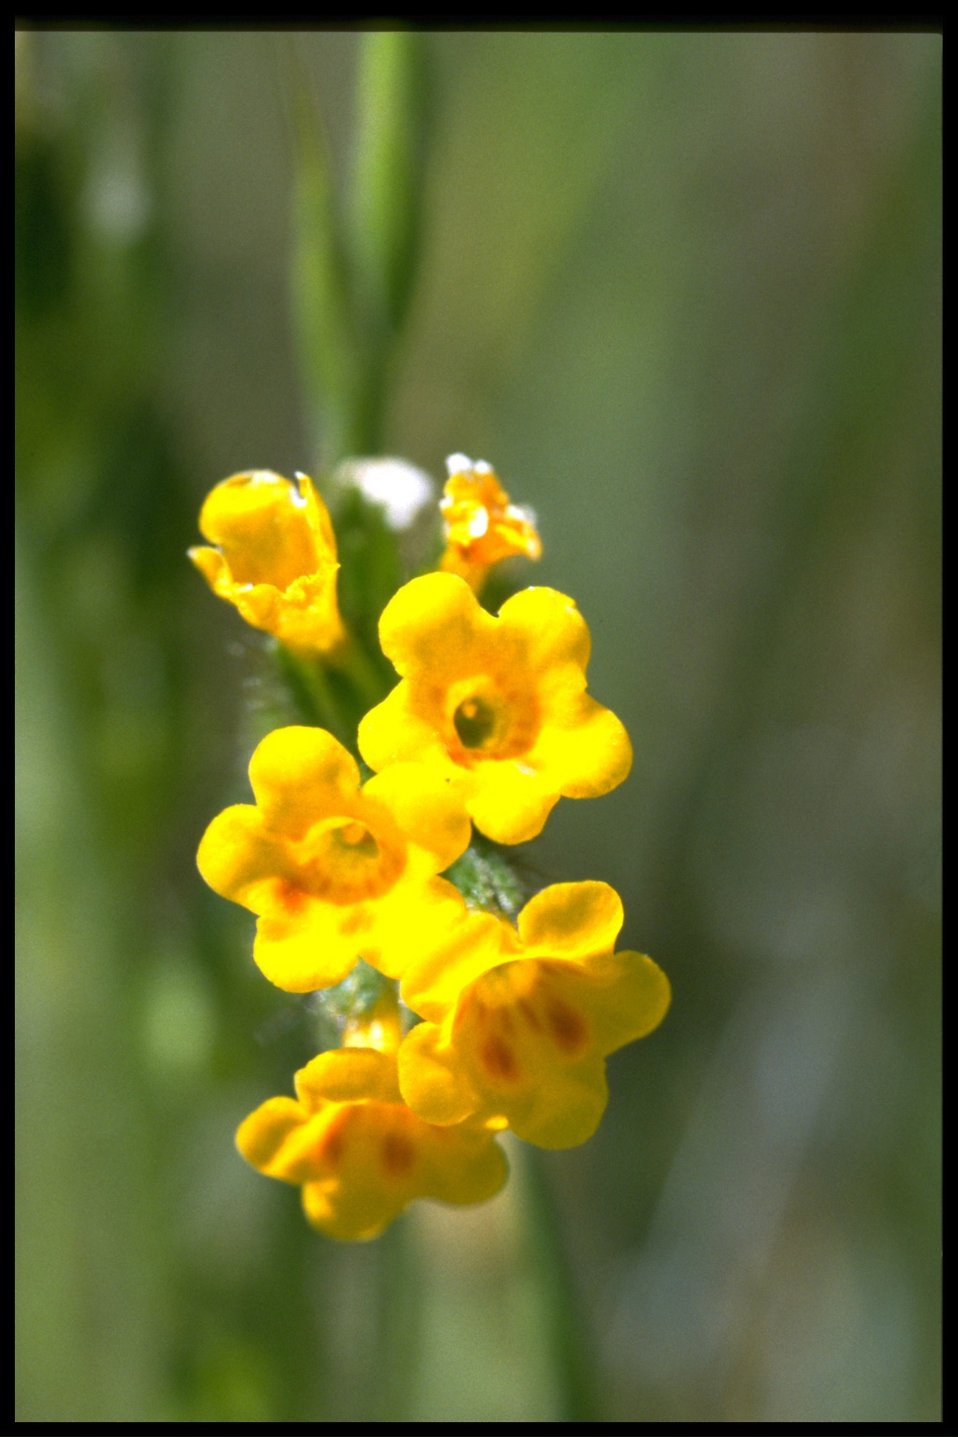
Closeup shot of Amsinckia intermedia, Amsinckia menziesii var intermedie.